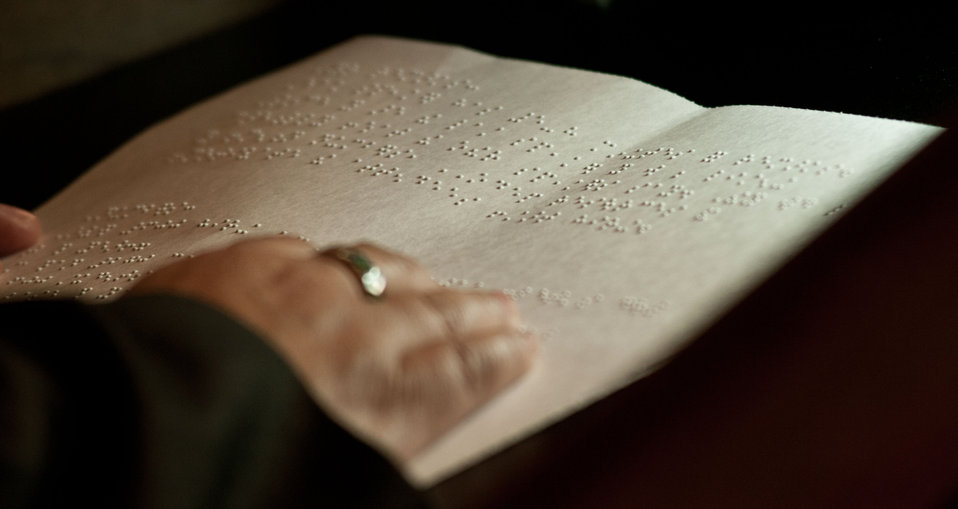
United States Department of Labor Assistant Secretary for the Office of Disability Employment Policy Kathy Martinez reads her speech while addresing the Work Force Recruitment Program’s (WRP) 'Your Key To Hiring Student Interns and Employees with Disabilities” event hosted by the United States Department of Agriculture (USDA) in Jefferson Auditorium, Washington, D.C. on Tuesday, February 7, 2012.